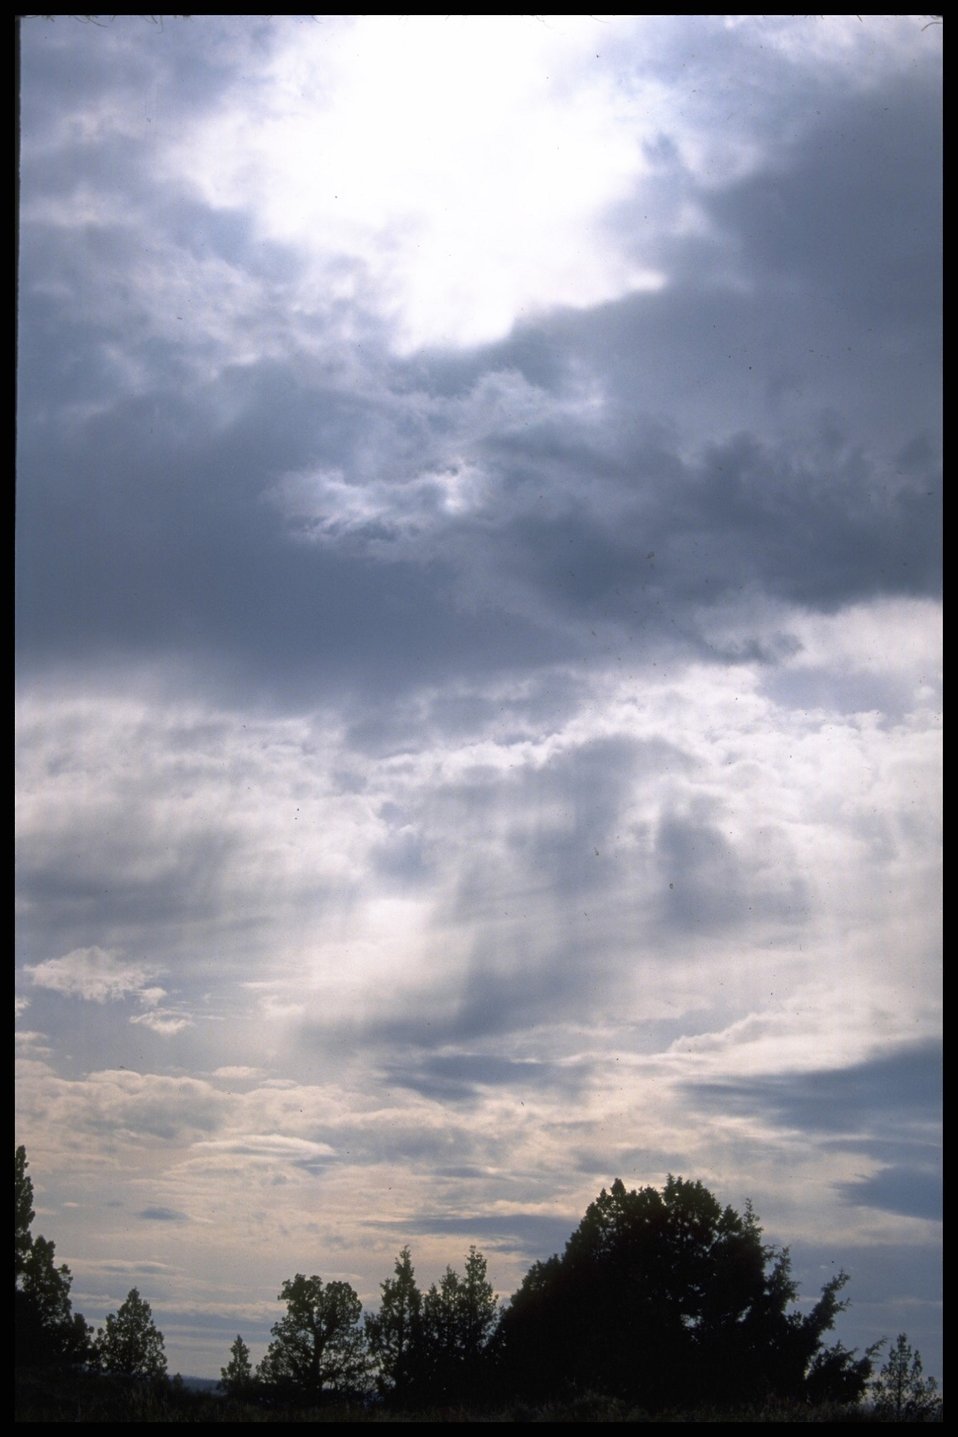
Sun burst above Lakeview District.